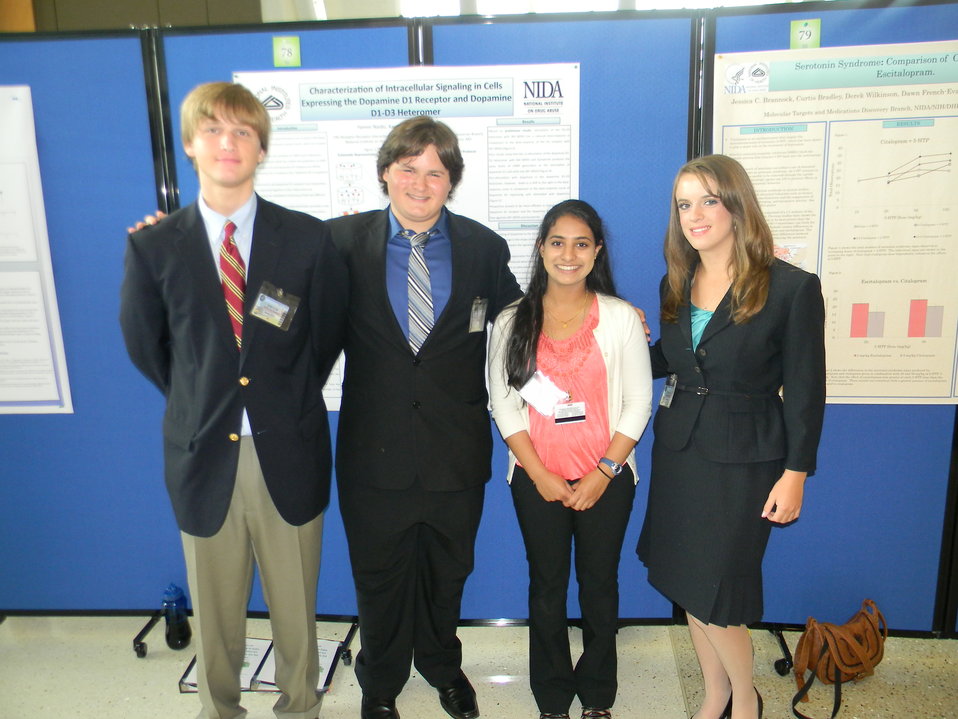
John Edward Solder, Benjamin Jake Kornick, Yamini T. Naidu and L.

In August 2012, last year's third place winner, 17-year-old Yamini T. Naidu, a student at Valley Catholic High School in Beaverton, Oregon, completed her internship at NIDA IRP in the Molecular Targets and Medications Discovery Branch, under Dr. Sergi Ferre. Her mentor was Dr. Xavier Guitart, and her
project looked at how dopamine receptors might structurally combine to impact cocaine addiction and other neurological disorders. Yamini met the 2012 award winners during their visit to NIDA IRP.
winners during their visit to NIDA IRP.